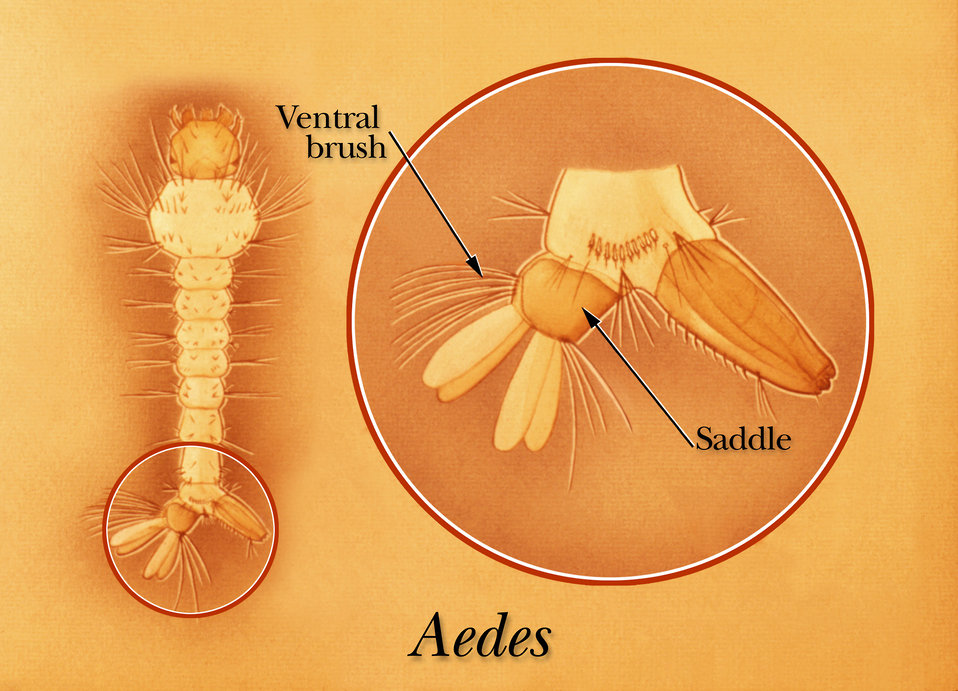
An illustration of Aedes mosquito larva with ventral brush and dorsal plate identified.